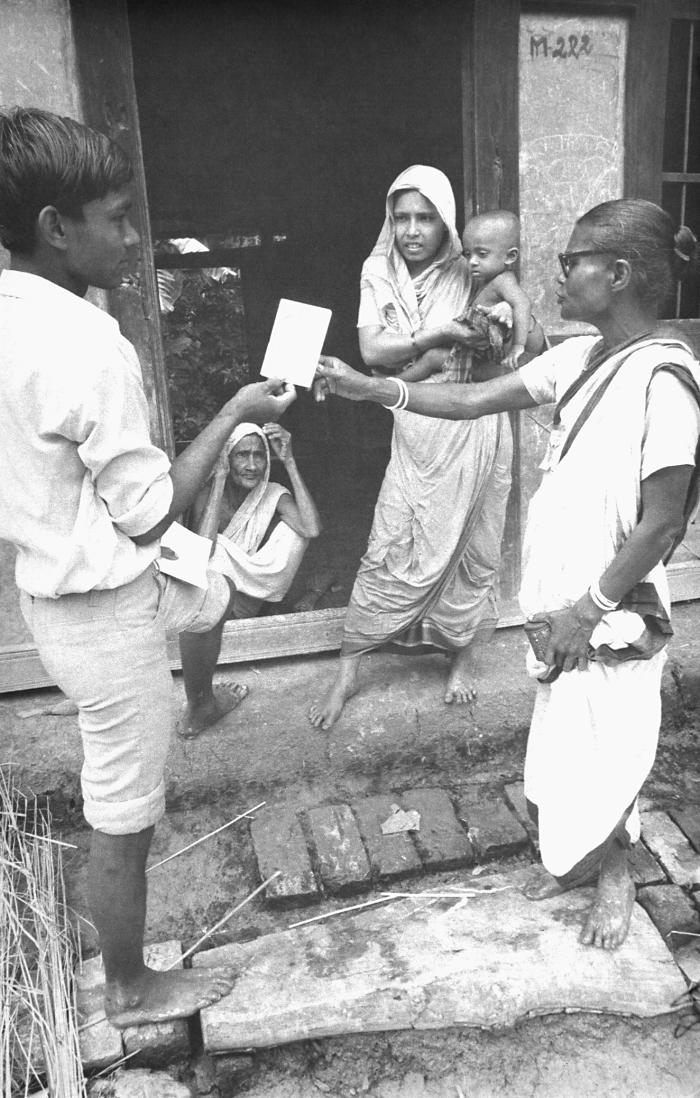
Walking from house to house, this resident eradication team volunteer was presenting the 'smallpox card', which presented an example of the disease, described the reward associated with ones discovery of a smallpox case, and asked if one knew of any such cases. During these country wide searches for smallpox, each one of the 12 million homes had to be visited, in order to show residents the smallpox case photograph, as well as to announce the money reward for anyone reporting a case, and to ask if they had seen or knew of any cases resembling the one pictured.Local residents who became resident vaccinators, played a profound role in achieving a successful outcome to the eradication program. As locals, they were viewed as familiar, and trusted, and spoke the local dialect, thereby, facilitating enhanced communication with fellow inhabitants.